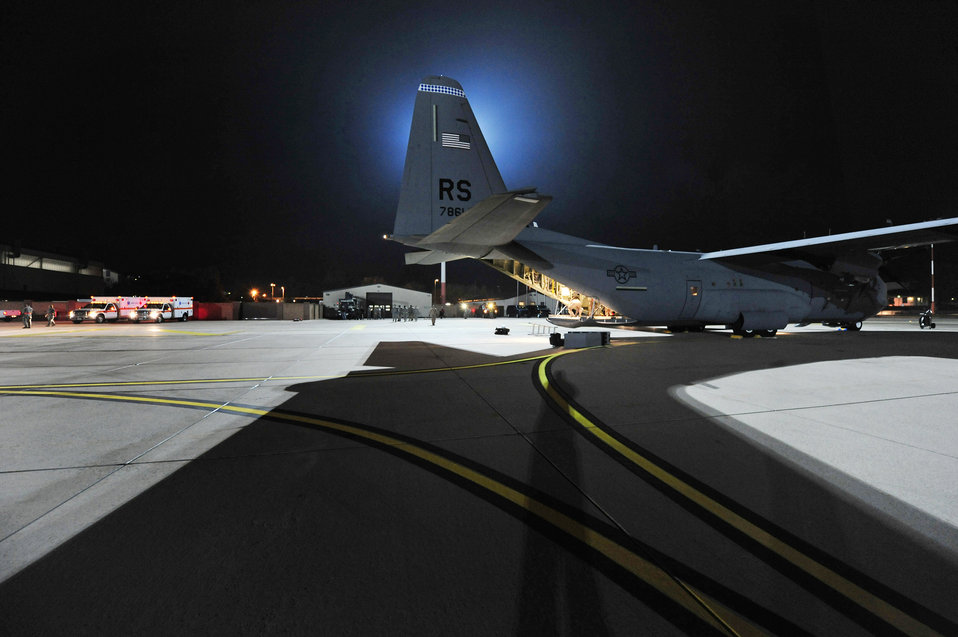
Airmen aid wounded Libyan fighters

Ambulance crews and Airmen stand by to unload wounded Libyan fighters from a C-130J Hercules Oct. 29, 2011, at Ramstein Air Base, Germany. At the request of the State Department officers and directed by the Secretary of Defense, U.S. Africa Command is supporting U.S. and international humanitarian relief efforts in Libya.